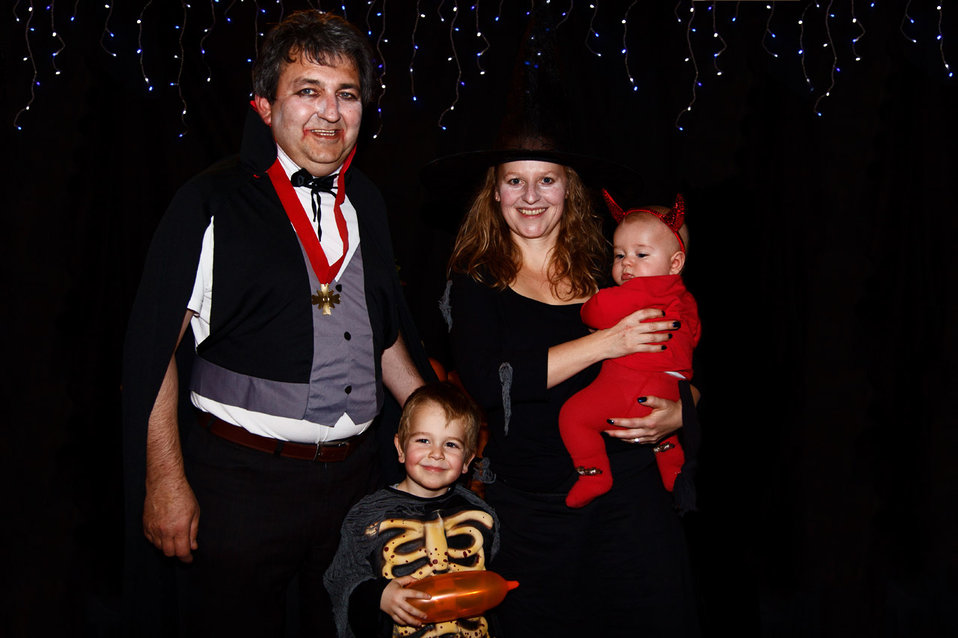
Halloween family on dark background.